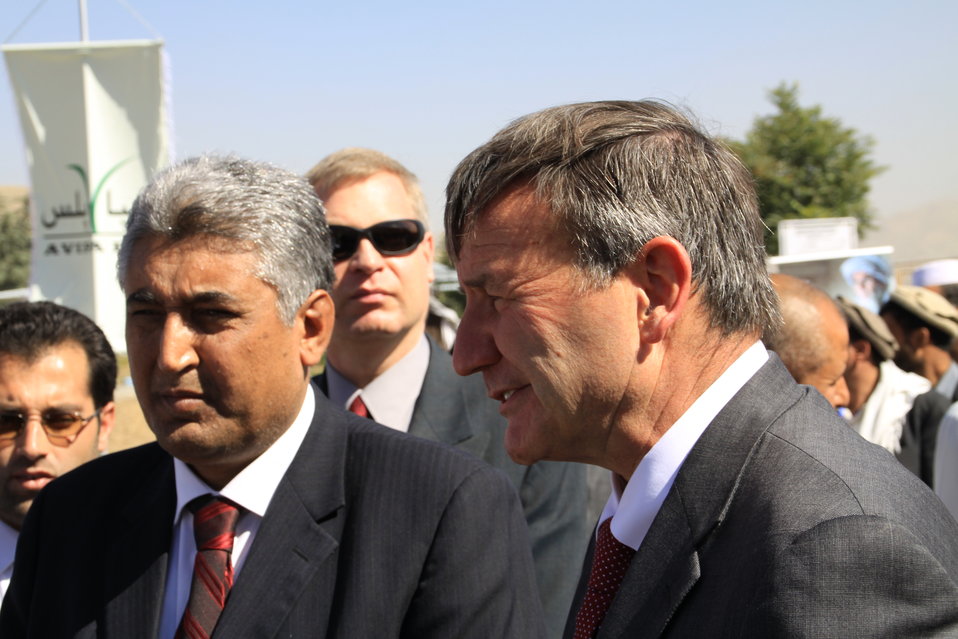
AVIPA Plus Wheat Seed Distribution 101005

US Ambassador Karl Eikenberry and USAID Acting Mission Director Kevin Brownawell joined the Minister of Agriculture, Irrigation and Livestock, H.E. Minister Mohammed Rahimi in signing a Memorandum of Understanding and distributing vouchers to area farmers for wheat and fertilizer.

US Ambassador Karl Eikenberry and USAID Acting Mission Director Kevin Brownawell joined the Minister of Agriculture, Irrigation and Livestock, H.E. Minister Mohammed Rahimi in signing a Memorandum of Understanding and distributing vouchers to area farmers for wheat and fertilizer.

US Ambassador Karl Eikenberry and USAID Acting Mission Director Kevin Brownawell joined the Minister of Agriculture, Irrigation and Livestock, H.E. Minister Mohammed Rahimi in signing a Memorandum of Understanding and distributing vouchers to area farmers for wheat and fertilizer.